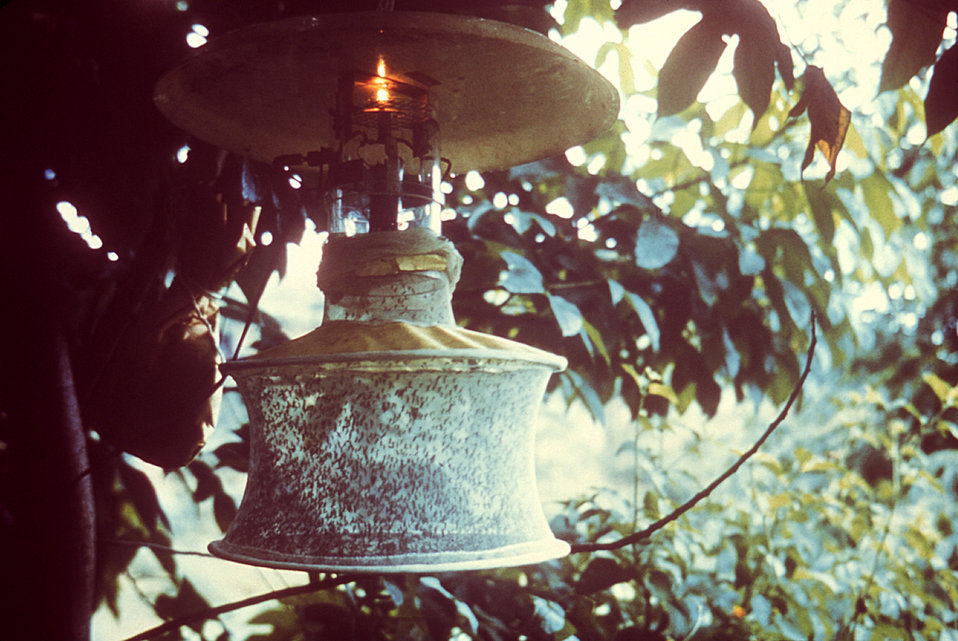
This 1970 photograph taken in El Salvador, depicted a CDC-type light trap, which had enticed, and trapped a large number of adult mosquitoes that were then ready for processing.